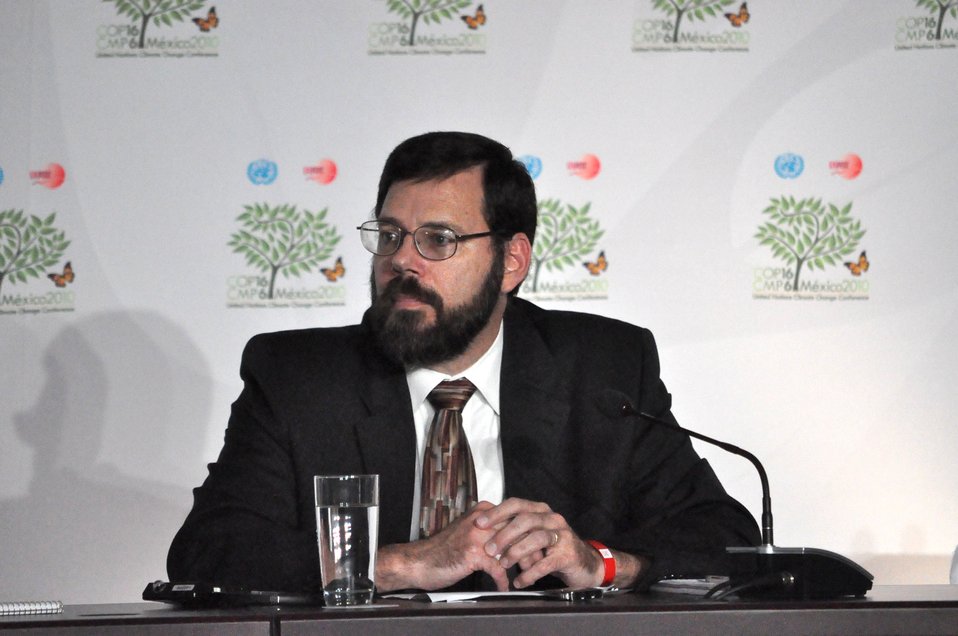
Deputy Special Envoy Pershing Leads the U.S. Press Briefing at COP-16

Deputy Special Envoy Jonathan Pershing leads the U.S. press briefing at the 16th Session of the Conference of the Parties to the UN Framework Convention on Climate Change in Cancun, Mexico, on November 29, 2010.